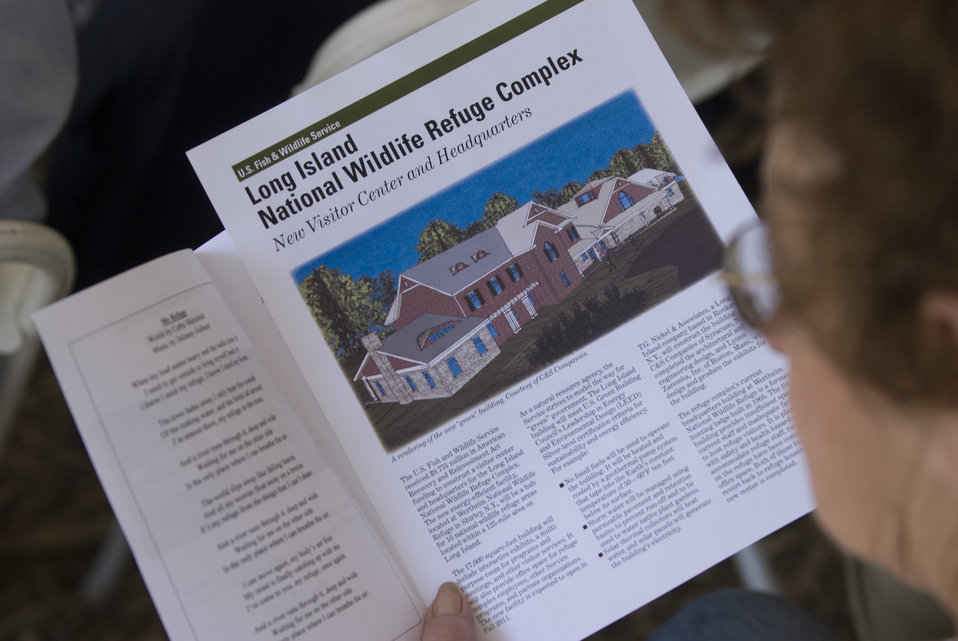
Long Island Refuge Complex Fact Sheet